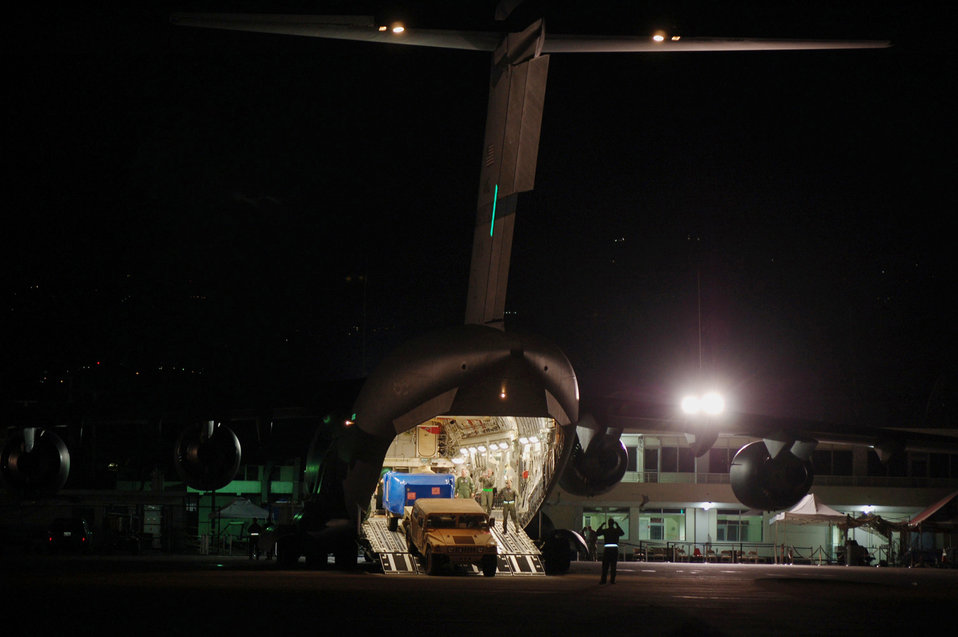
Airman sees Haiti scene unfold from under the brim of many hats

Mobility Airmen assigned to the 621st Contingency Response Wing from Joint Base McGuire-Dix-Lakehurst, N.J. unload relief supplies from a C-17 Globemaster III at Toussaint Louverture International Airport Jan. 28, 2010, in Port-au-Prince, Haiti. The wing provided airfield operations expertise in the aftermath of a 7.0 magnitude earthquake that crumbled most of the surrounding area, killing hundreds of thousands and displacing millions from their homes.